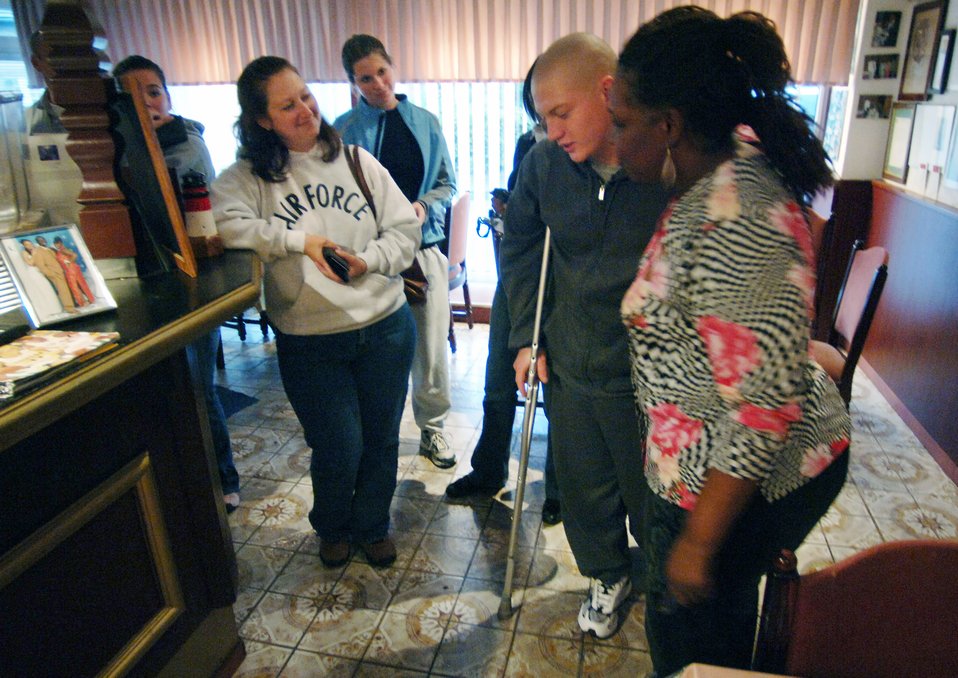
Volunteer organization lifts spirits of wounded veterans

Mama West's restaurant owner, Brenda West (right), speaks with Army Specialist Jeremy Humphries before he returns to Landstuhl Regional Medical Center with